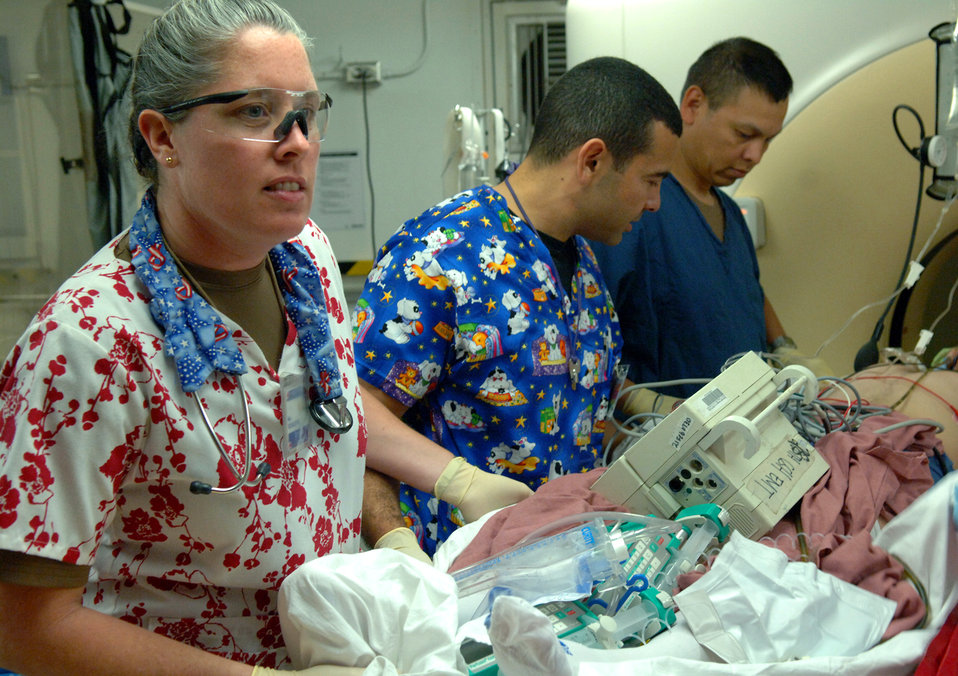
Reserve Airmen contributing to medical mission in Iraq

Major Dianna Schulkers, nurse manager of the emergency department at the Air Force Theater Hospital at Balad Air Base, Iraq, is used to caring for trauma patients with war wounds such as bomb blasts, gunshot wounds, and burns. She is an Air Force Reservist, deployed from the 920th Aeromedical Staging Squadron at Patrick Air Force Base, Fla., and is also a emergency department nurse at Cape Canaveral Hospital in Florida.